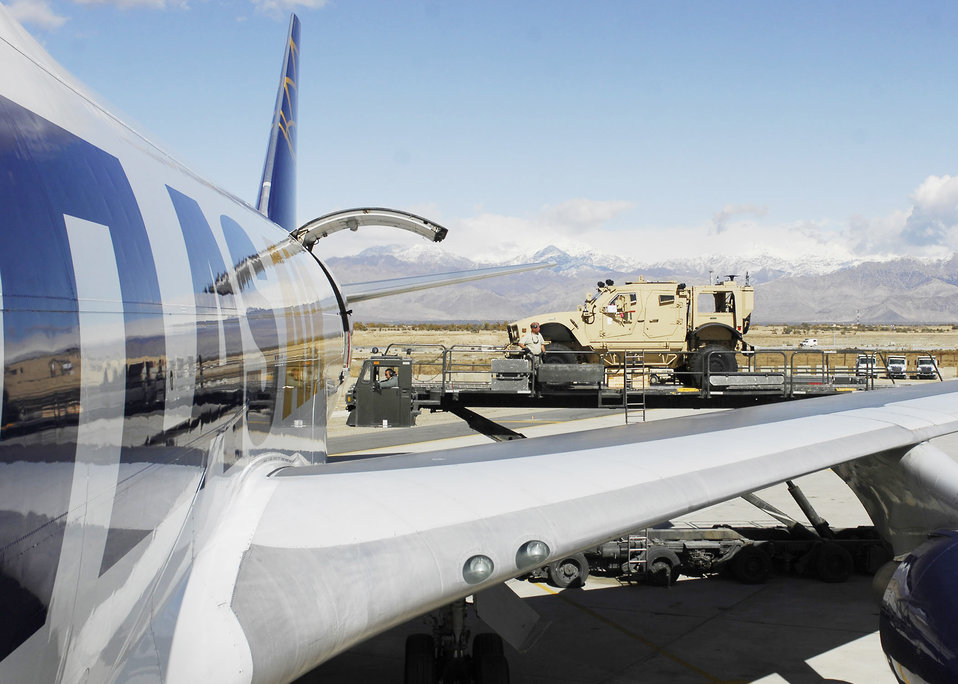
Airmen leave a footprint in Afghanistan

Tech. Sgt. Gordon Criswell stands next to a multipurpose all terrain vehicle making sure it doesn't move while the K-loader lowers it to the ground Nov. 9, 2009, at Bagram Airfield, Afghanistan. Sergeant Criswell is an air transportation specialist from the 455th Expeditionary Aerial Port Squadron. Sergeant Criswell is deployed from the 621st Contingency Response Wing at Joint Base McGuire-Dix-Lakehurst, N.J. The M-ATV is designed to replace the up-armored Humvee in Afghanistan.